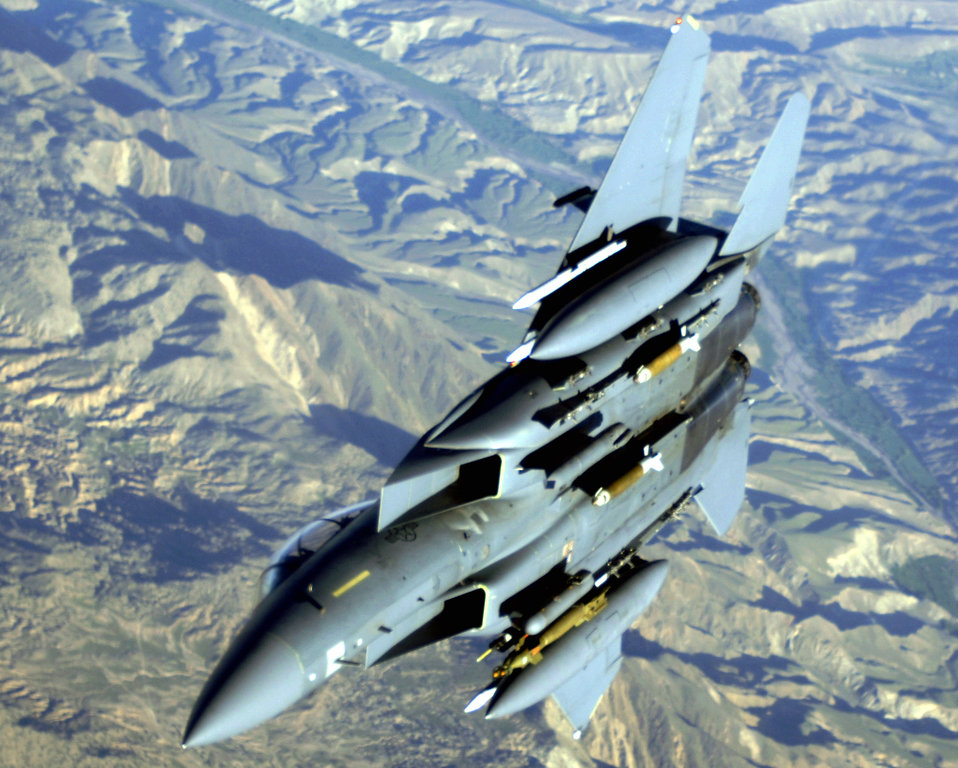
June 17 airpower summary: F-15Es deter anti-Afghan forces massing attack

An F-15E Strike Eagle soars over the mountains and high desert of Afghanistan providing close-air support and aerial overwatch to troops on the ground engaged in rooting out insurgent sanctuaries and support networks. The Strike Eagle is a dual-role fighter designed to perform air-to-air and air-to-ground missions.